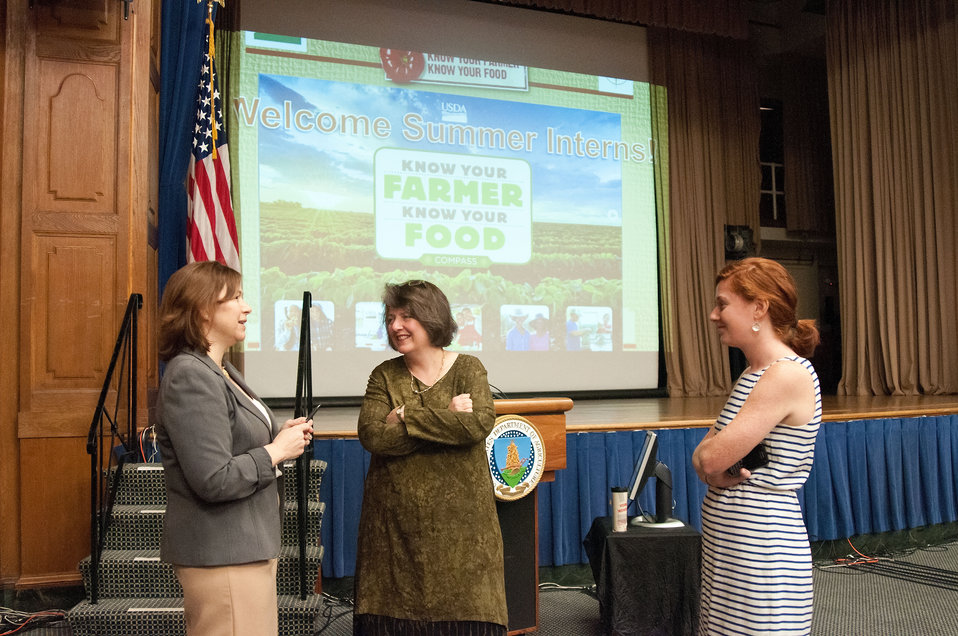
Deputy Provost and Chief Training Officer, Virtual University, Dr. Zina Sutch (left), Agriculture Deputy Secretary Dr. Kathleen Merrigan (center), and Special Assistant to the Deputy Secretary Brooke Barron, discuss the program. Dr. Merrigan presented to United States Department of Agriculture interns in Washington, D.C., on Thursday, July 26, 2012. The Know Your Farmer Know Your Food Compass is an interagency initiative launched in September 2009 that focuses on local and regional food sourcing. The Know Your Farmer Know Your Food Compass is a very important aspect of the Department of Agriculture’s agenda on assisting in restoring the health of the rural economy.